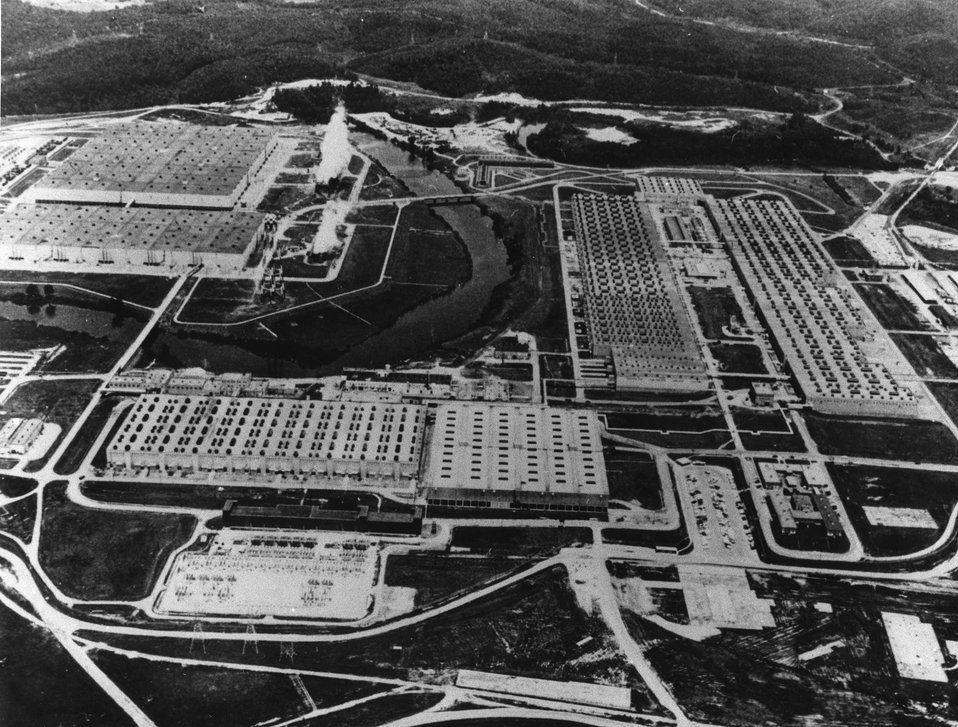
This huge plant at Oak Ridge, Tennessee, produces uranium-235 by the gaseous diffusion process. c. 1965